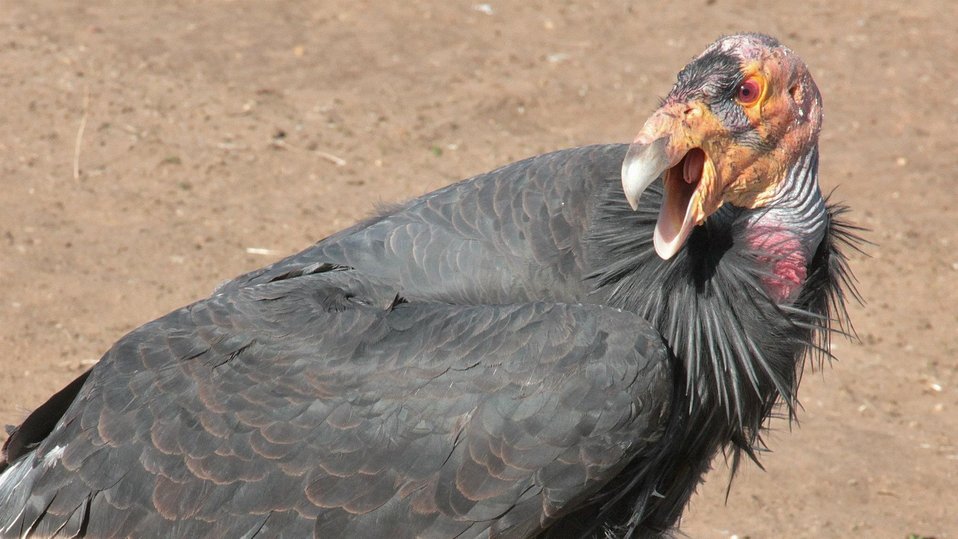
California condor at Bitter Creek NWR

The adult California Condor is a uniform black, with the exception, especially in the male, of large triangular patches or bands of white on the underside of the wings. It has gray legs and feet, an ivory-colored bill, a frill of black feathers surrounding the base of the neck, and brownish red eyes.

The juvenile is mostly a mottled dark brown with blackish coloration on the head. It has mottled gray instead of white on the underside of its flight feathers.

As an adaptation for hygiene, the condor's head and neck have few feathers, which exposes the skin to the sterilizing effects of dehydration and solar ultraviolet light at high altitudes.

The skin of the head and neck is capable of flushing noticeably in response to emotional state, a capability that can serve as communication between individuals.

The skin color varies from yellowish to a glowing reddish-orange.

Contrary to the usual rule among true birds of prey, the female is slightly smaller than the male. Overall length can range from 109–140 cm (43–55 in) and the wingspan is 2.49–3 m (8.2–9.8 ft). Their weight can range from 7–14.1 kg (15–31 lb), with estimations of average weight ranging from 8–9 kg (18–20 lb).

Wingspans of up to 3.4 m (11 ft) have been reported but no wingspan over 3 m (9.8 ft) has been verified. Most measurements are from birds raised in captivity, so determining if there are any major differences in measurements between wild and captive condors is difficult.

Juvenile:

California Condors have the largest wingspan of any North American bird. They are surpassed in both body length and weight only by the Trumpeter Swan and the introduced Mute Swan. The American White Pelican and Whooping Crane also have longer bodies than the condor. Condors are so large that they can be mistaken for a small, distant airplane, which possibly occurs more often than they are mistaken for other species of bird.

The middle toe of the California Condor's foot is greatly elongated, and the hind one is only slightly developed. The talons of all the toes are straight and blunt, and are thus more adapted to walking than gripping.